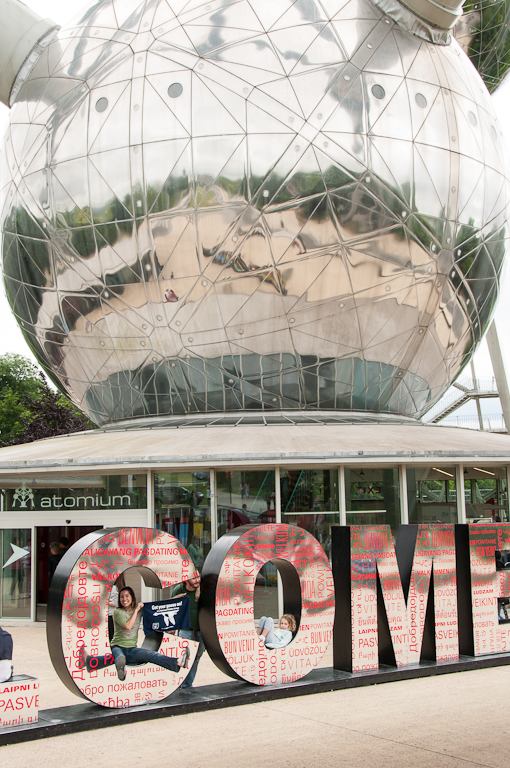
GYGO! Goes International!

A USFWS employee took some fun GYGO! photos while on vacation with family in Europe. Here's another from Brussels!